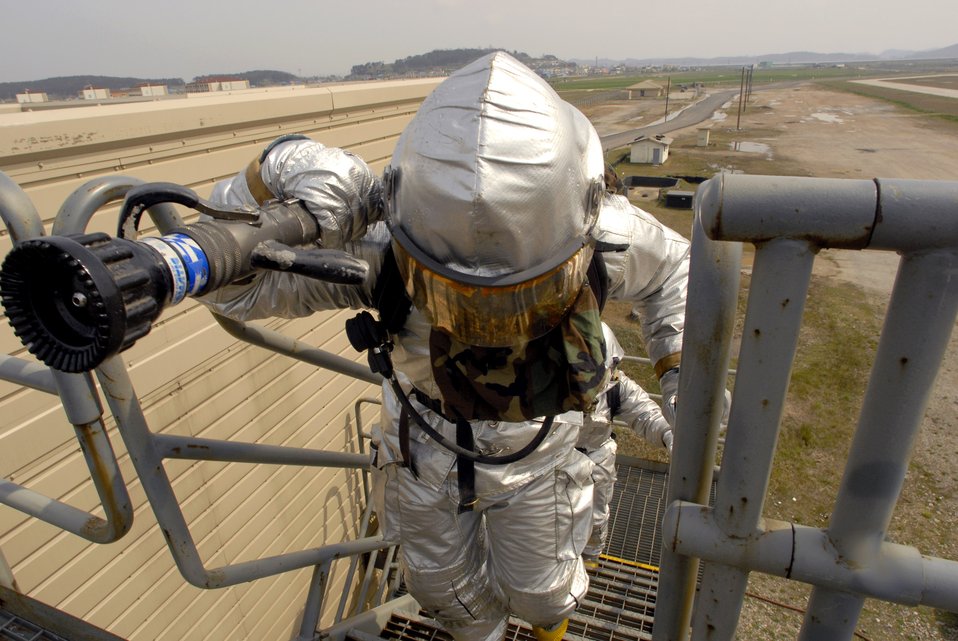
Into the fire

Senior Airman James Lionel from the 8th Civil Engineer Squadron climbs stairs to respond to a simulated fire during an operational readiness inspection April 17 at Kunsan Air Base, South Korea. Kunsan AB is currently undergoing an operational readiness inspection to test the 8th Fighter Wing's ability to conduct its wartime mission.